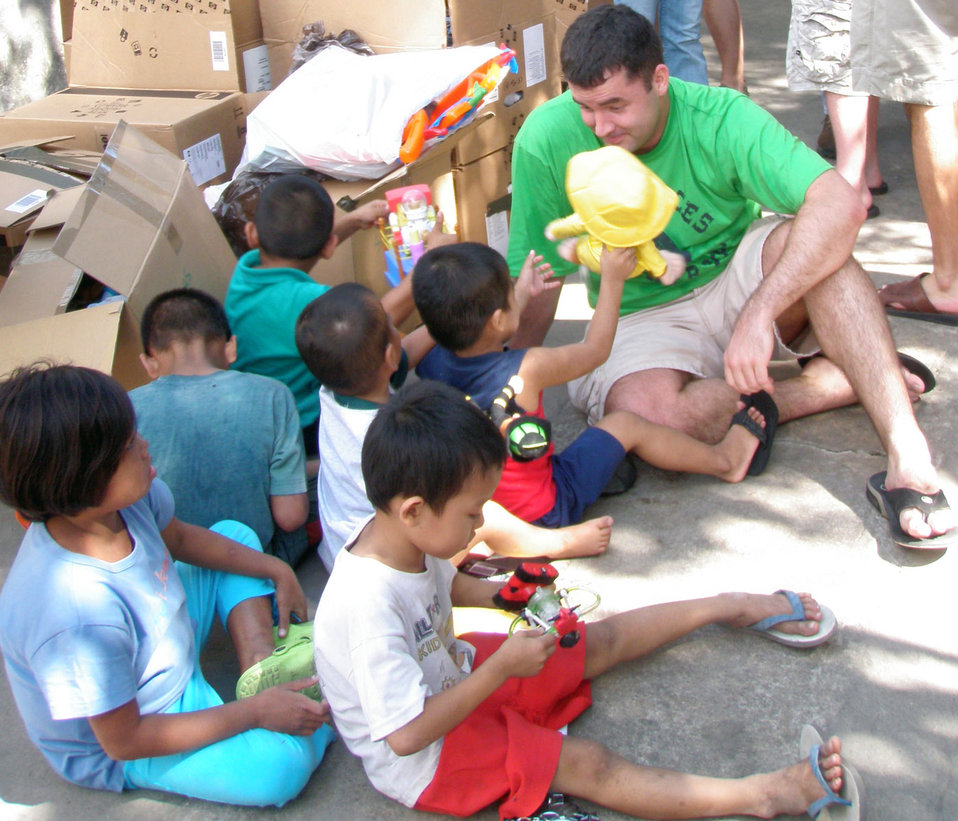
Kadena Airmen visit orphanage in Philippines

Capt. Zak Blom listens to children after handing out toys to children Jan. 19 at the Duyan ni Maria orphanage in Angeles City, Pampanga in the Philippines. The captain and members of the 17th Special Operations Squadron, 353rd Operations Support Squadron and 25th Intelligence Squadron Det. 3 stopped by the orphanage and single mothers home with boxes of clothing, shoes, toys, books and school supplies. Captain Blom is a 17th SOS pilot.